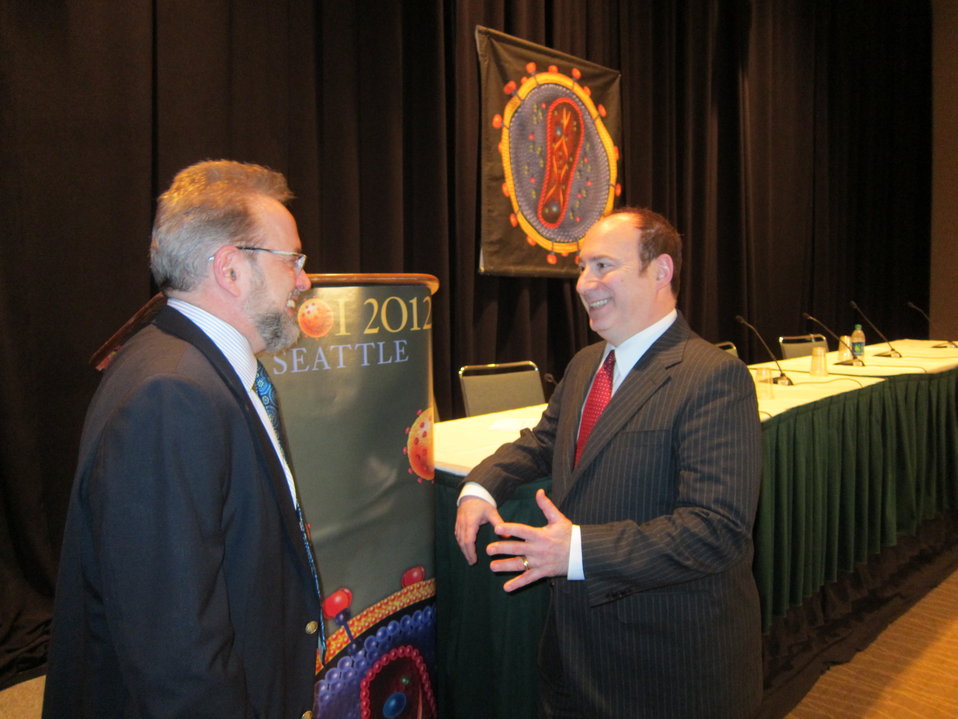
Drs V. and Horberg to be used for our podcast from CROI highlighting a PACHA member